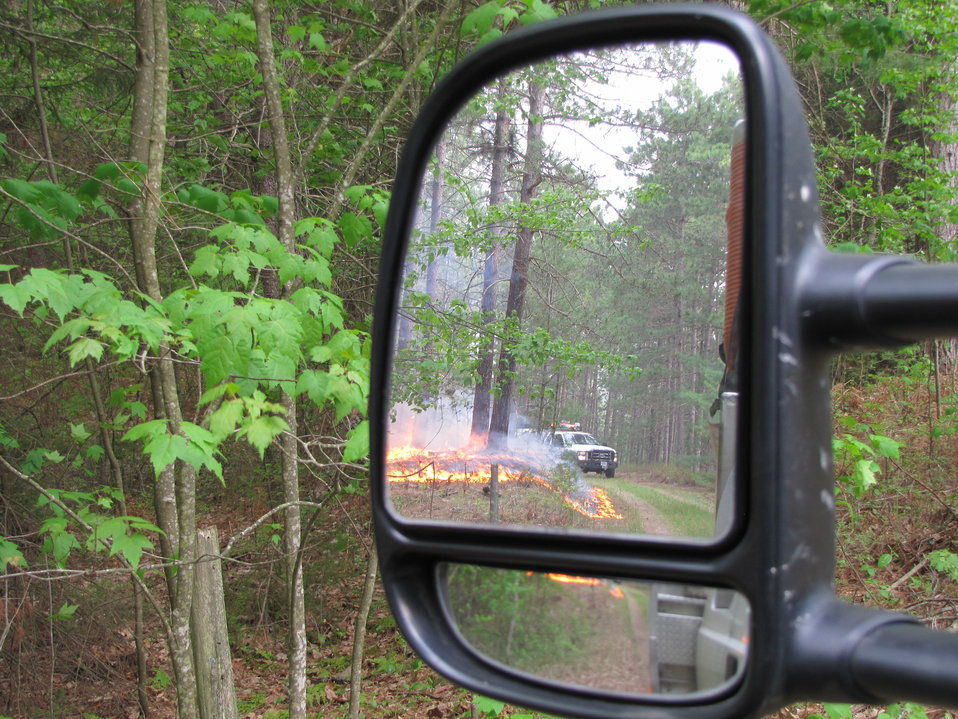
Fire Shown in Car Mirror

Lighting a back fire off Pine Creek Road to keep the main fire contained.